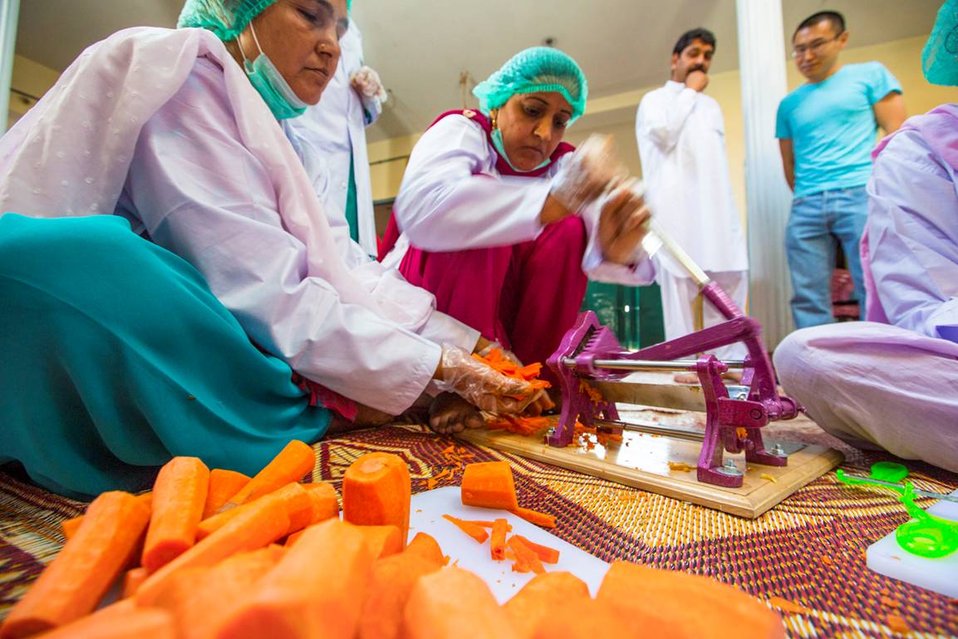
USAID's Agribusiness Project Women FEG for Food Processing - Pickle Production at Village Jabbi

www.usaid.gov/pk/db/sectors/growth/project 750.html